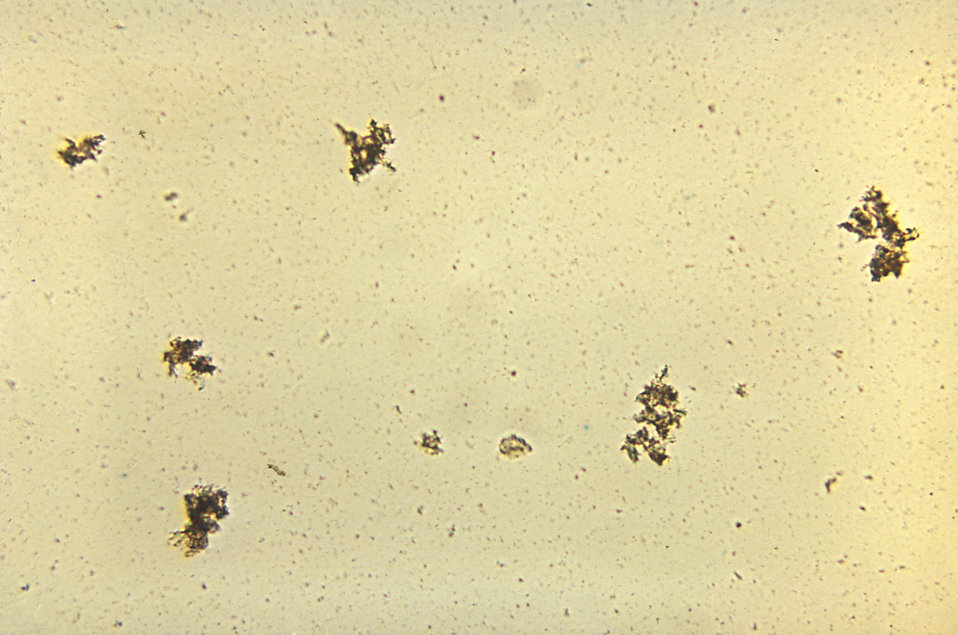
This unstained micrograph represents a reactive control VDRL Slide Test; Mag. 100X.